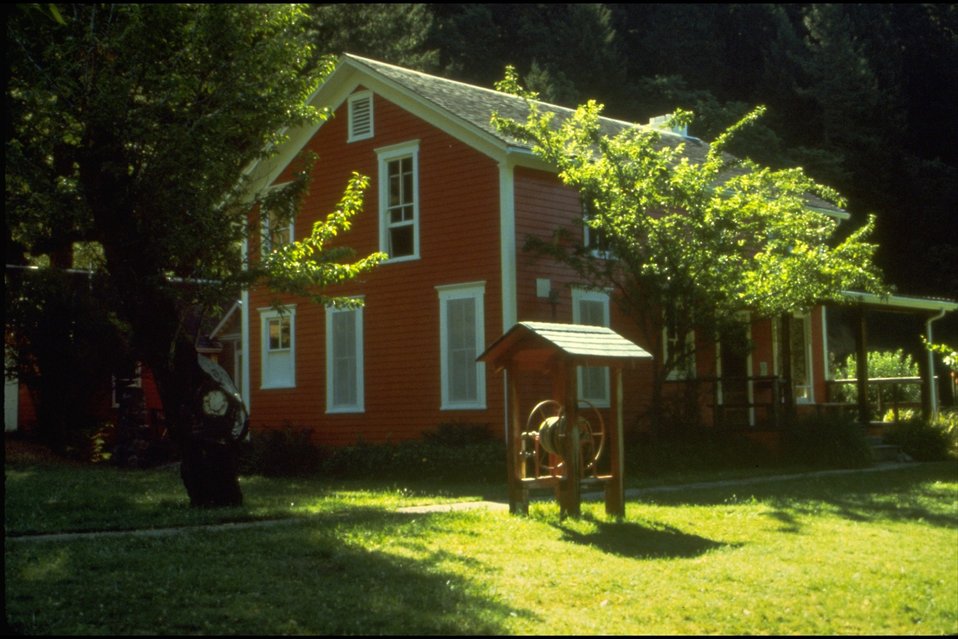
Rogue River Ranch - Main House, front and West side.